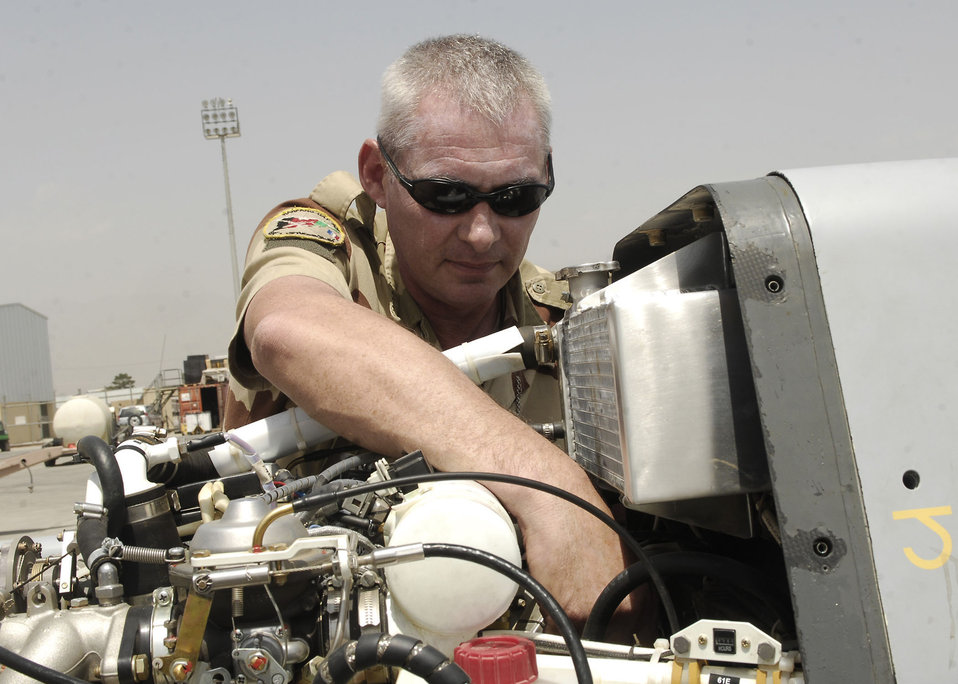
French unmanned aircraft protect Bagram Airmen

French air force Adjutant Chief Richard Muze ensures all parts of the unmanned aircraft engine are working properly July 11 at Bagram Airfield, Afghanistan. Adjutant Chief Muze is from the French air force unmanned aircraft operational squadron deployed to Bagram Airfield in support of Operation Enduring Freedom.